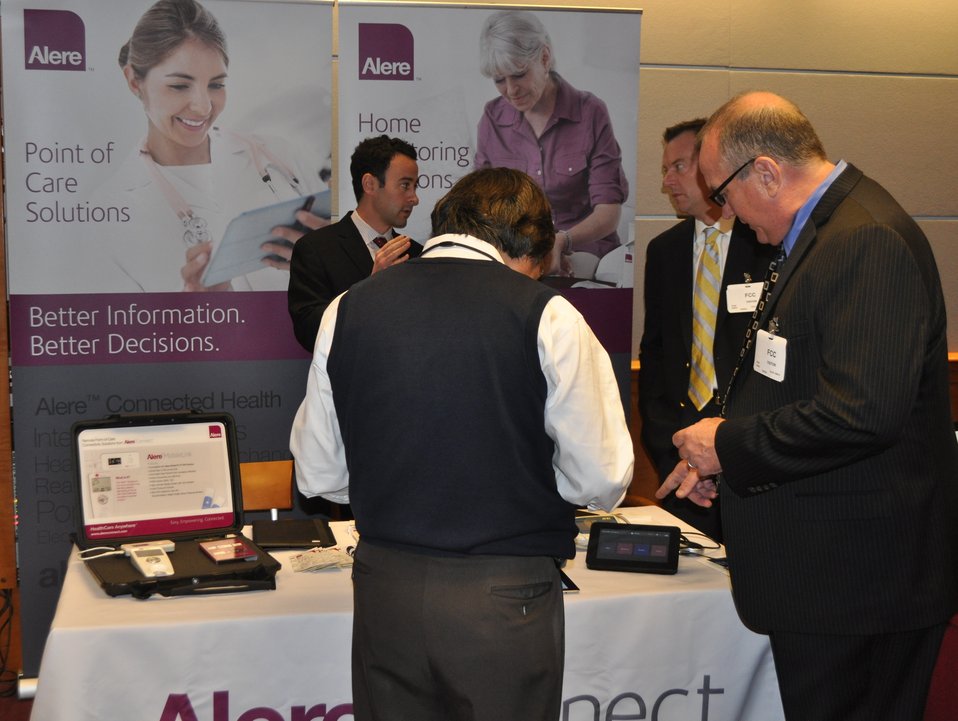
12.6.13 mHealth Innovation Expo

FCC mHealth Innovation Expo.